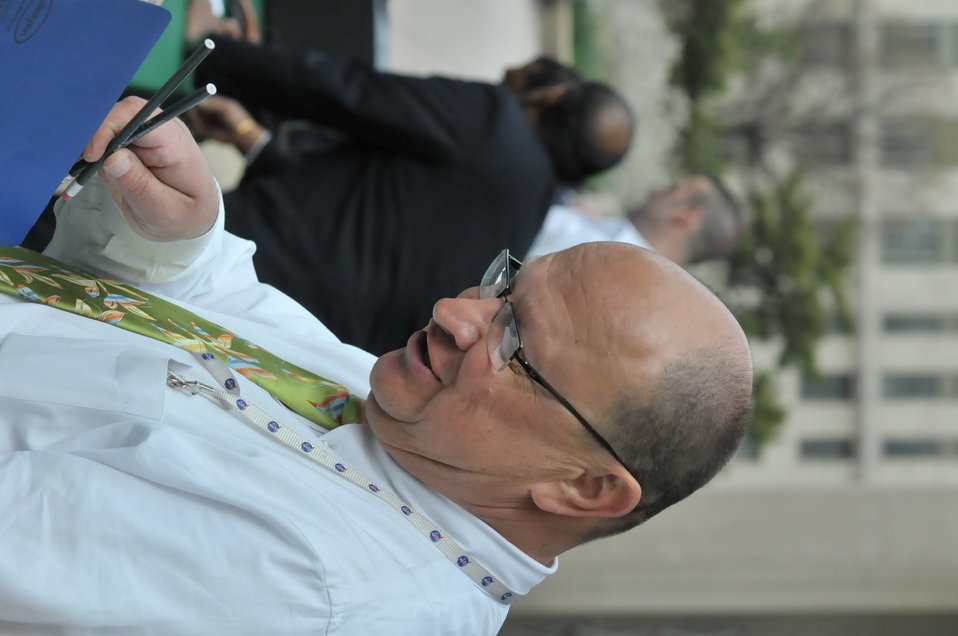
U.S Postal Services introduces a new Global: Sea Surface temperatures forever stamp at the Earth Day program at Department of Energy on April 22, 2014.